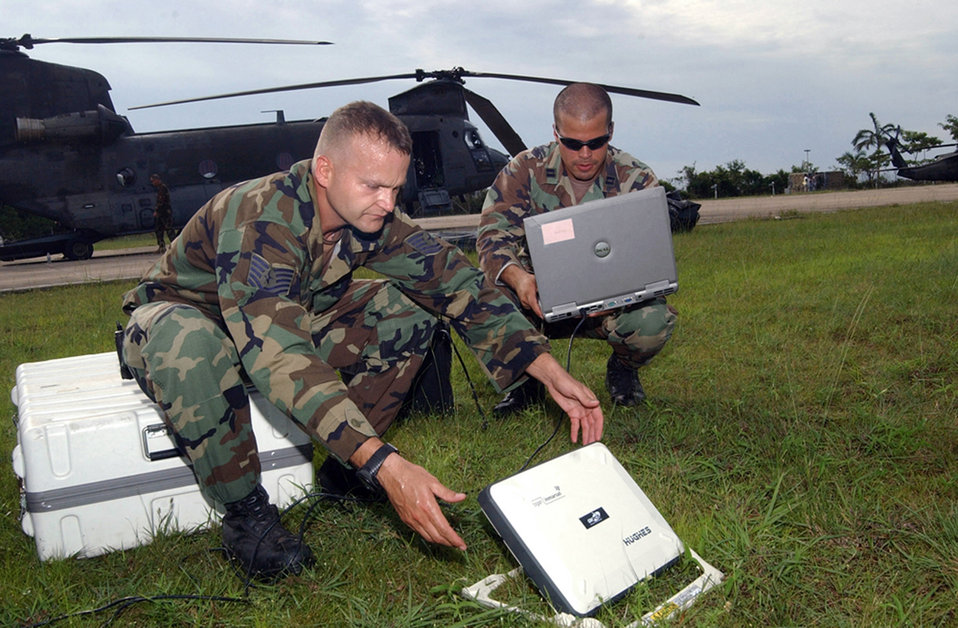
Assessment team arrives in Belize

Tech. Sgt. Russell Fairbanks (left) and Capt. Ernesto Garcia set up a broadband global access network system shortly after landing at Belize City, Belize, to establish Internet and e-mail access for communication with Joint Task Force-Bravo at Soto Cano Air Base, Honduras. The two are part of a group of approximately 20 Soldiers and Airmen deployed here to provide an initial assessment of the country following Hurricane Dean Aug. 21. Sergeant Fairbanks and Captain Garcia are assigned to J6 Communications at Soto Cano AB.